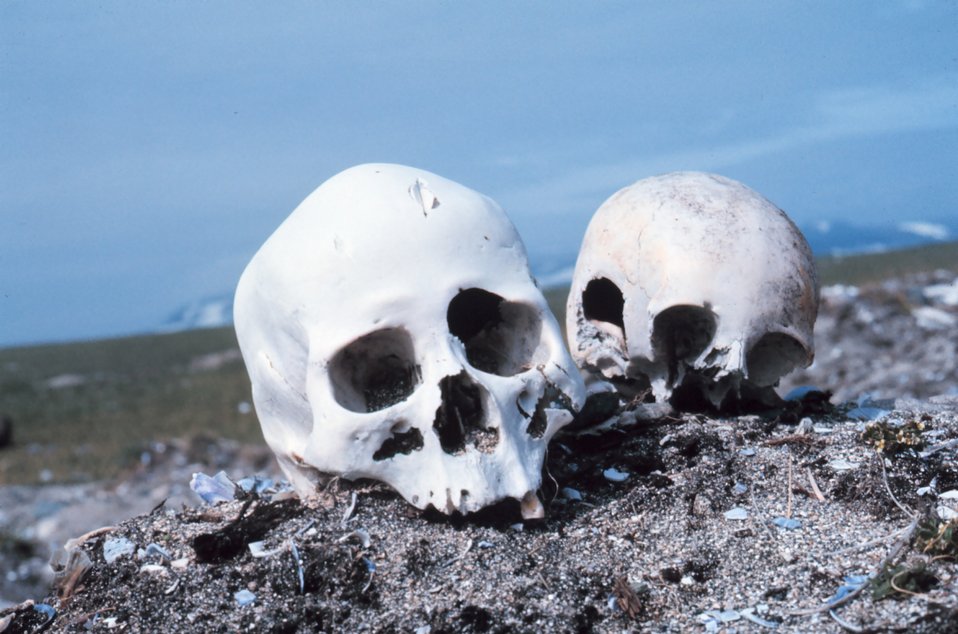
Currents carry many dead things to Punuk Island making it the graveyard of the Bering Sea.